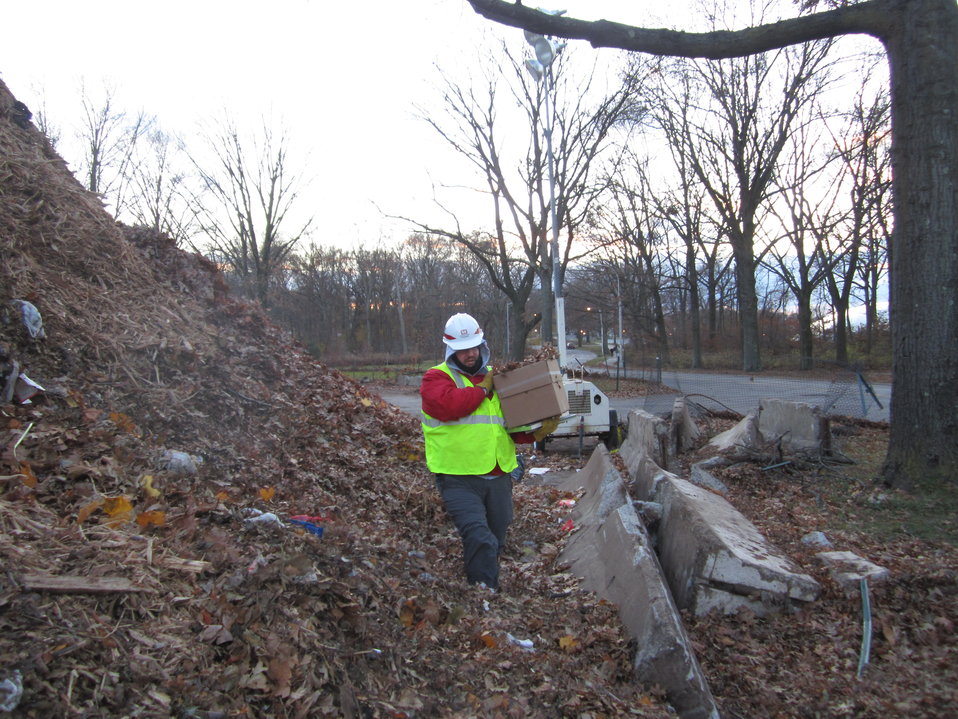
Sacramento District responds to Sandy

The Sacramento District's Jamie Robb collects a sample of vegetative debris at Floyd Bennett Field in Queens, NY, Nov. 24, 2012. Trees and shrubs destroyed by Sandy are ground up for reuse or disposal. The wood chips are often made available as mulch for landscaping, but sometimes must be discarded if there's a risk that they're infested with an invasive species. The Asian longhorn beetle is a threat in this part of the country. Robb is taking samples to make sure the chips are generally being ground down to less than an inch. Chips larger than that increase the risk of carrying the beetle.